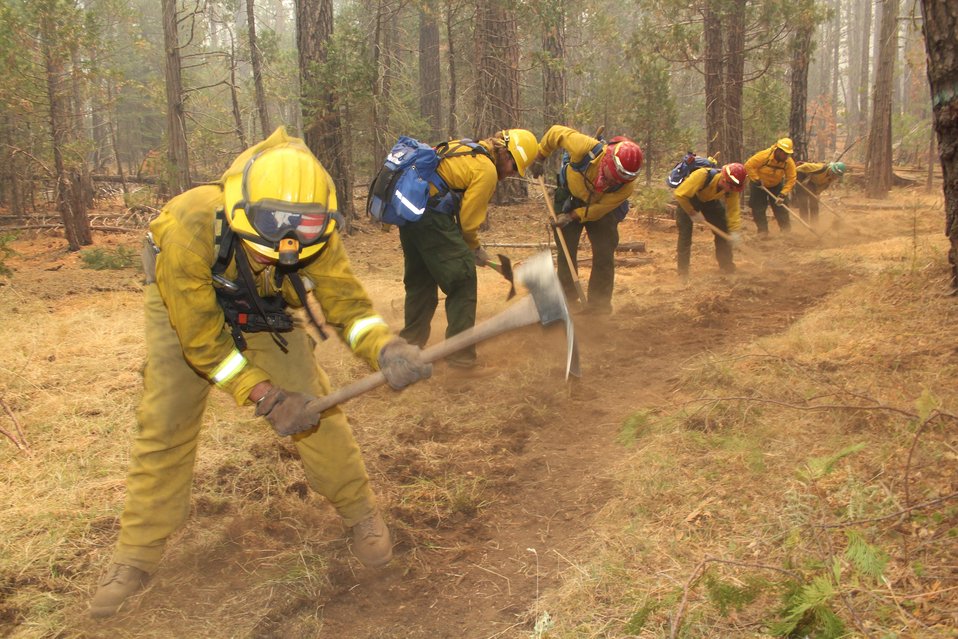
Fire Crews construct fireline on the Rim Fire. The Rim Fire in the Stanislaus National Forest near in California began on Aug. 17, 2013 and is under investigation. The fire has consumed approximately 192,737 acres and is 30% contained.